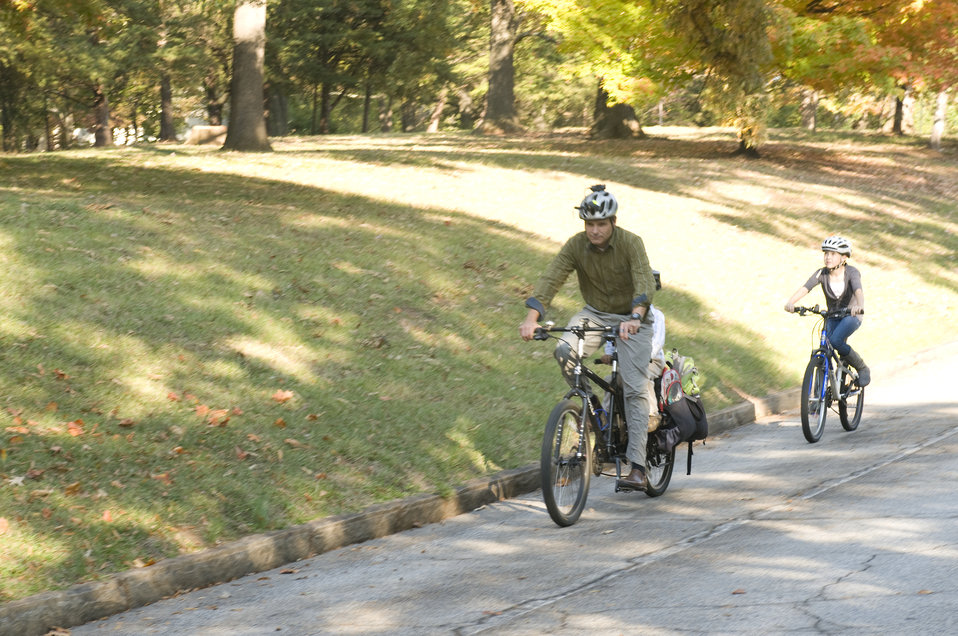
Protective measures having been taken by a careful father, this dad and his two young children were on their way, as they embarked on a Georgian bicycle trip. The daughter was riding her own bike, while the son, seated in a small child-safe bicycle seat, was riding on the same bike as his dad. All three were wearing aerodynamic safety helmets, and clothing to protect them from the sun, wind and insects. The only thing missing, was a piece of outerwear, which was very bright in color, allow for a greater degree of rider visibility.